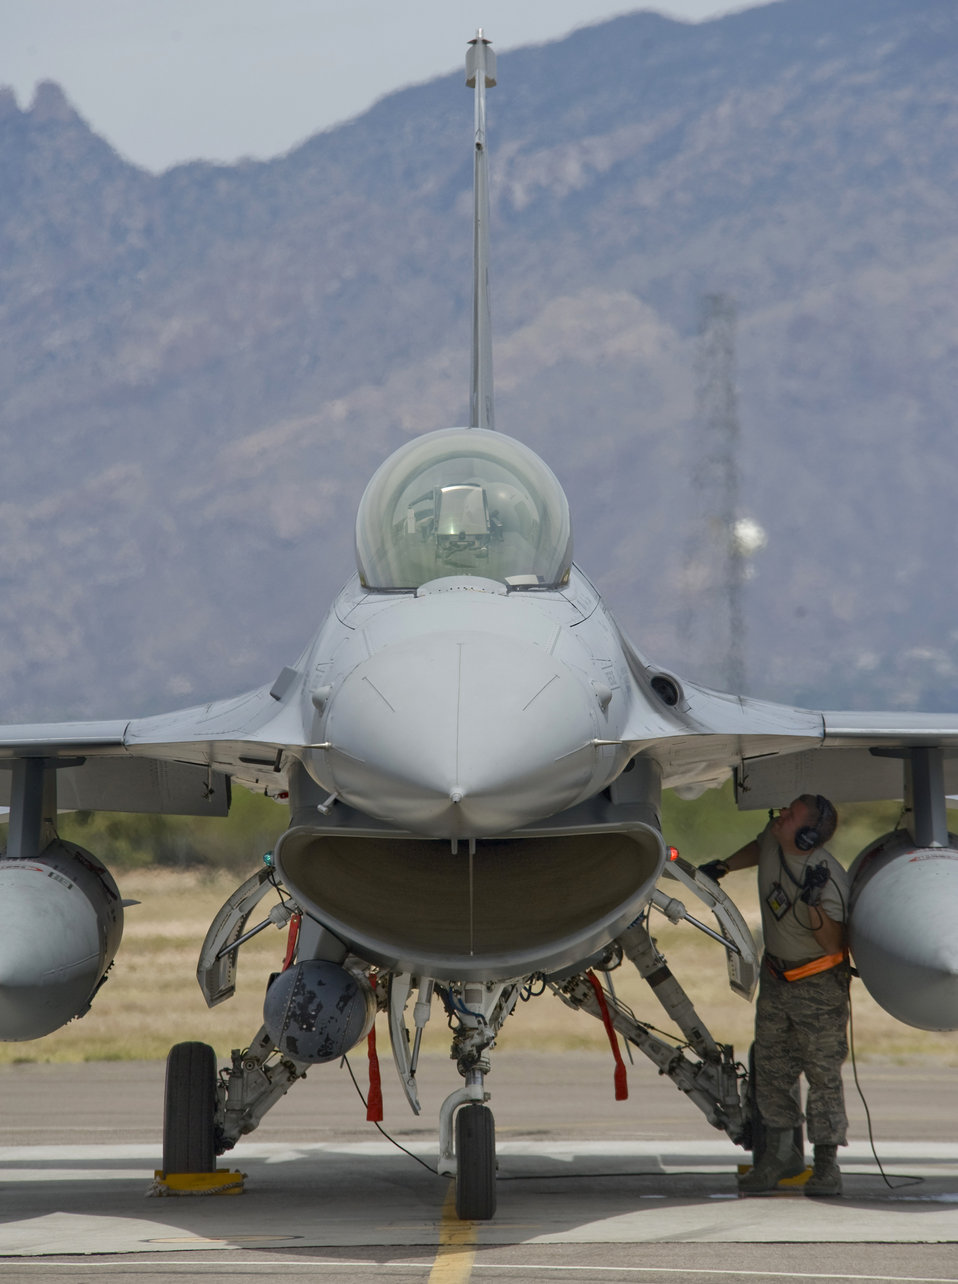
Airmen train next generation

Senior Airman Adam Flood conducts pre-flight checks after engine start up April 24 at Davis-Monthan Air Force Base, Ariz. Airman Flood is assigned to the Texas Air National Guard’s 149th Fighter Wing in San Antonio and participating in Exercise Coronet Cactus. Airman Flood is an F-16 Fighting Falcon crew chief.